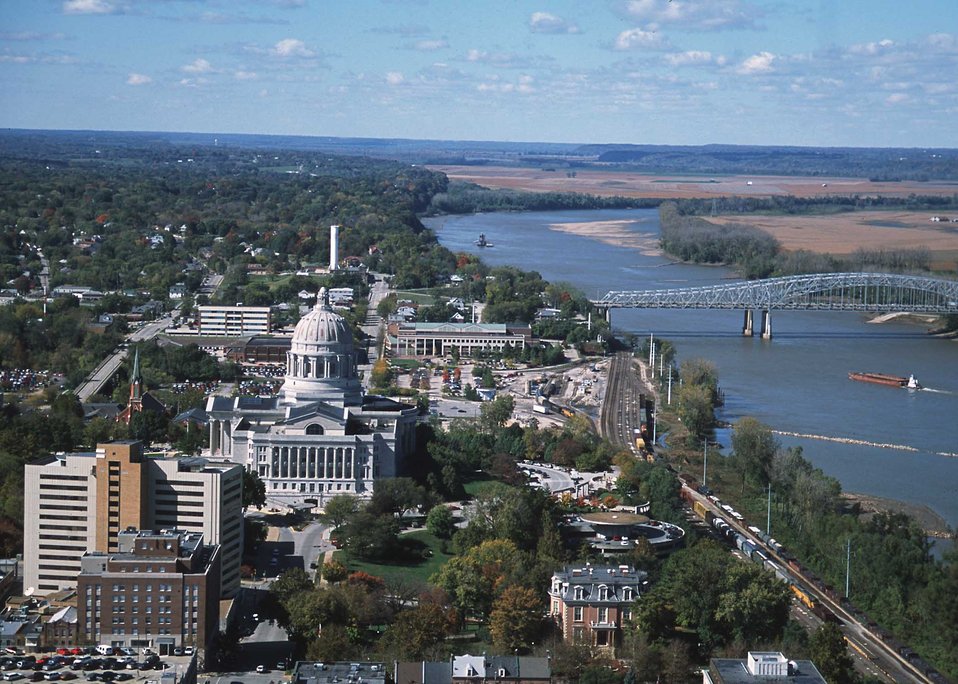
The Missouri River separates agriculture from the city life as it flows past the Missouri State Capitol in Jefferson City.